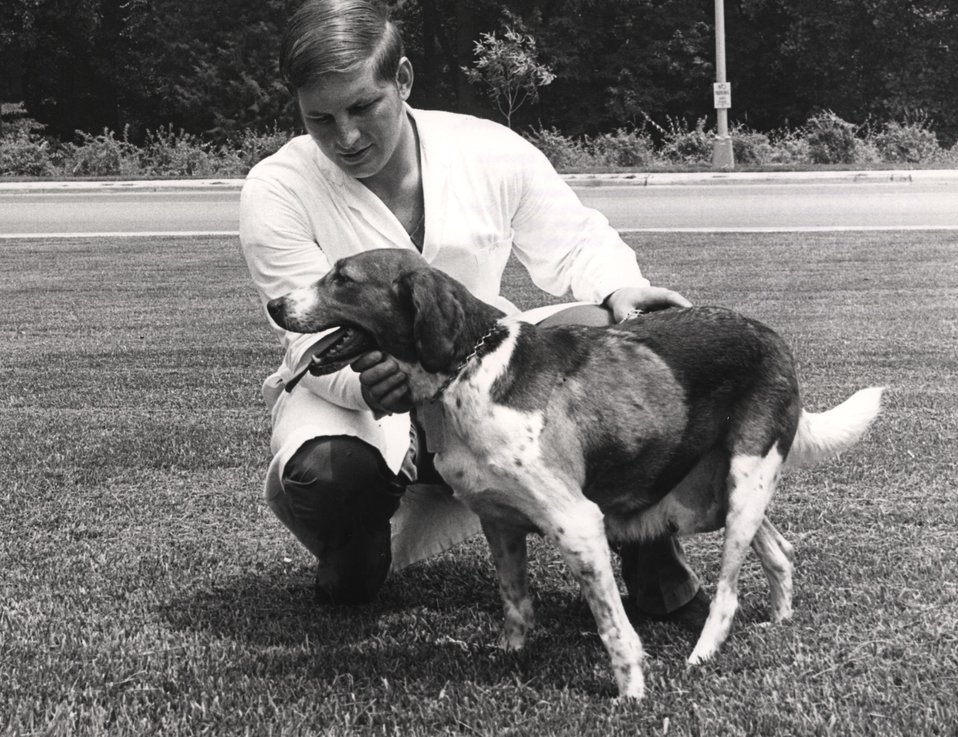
A nuclear-powered pacemaker was implanted in Beagle Brunhilde in 1969 at the National Heart Institute of the National Institute of Health, Bethesda, Maryland. c. 1972